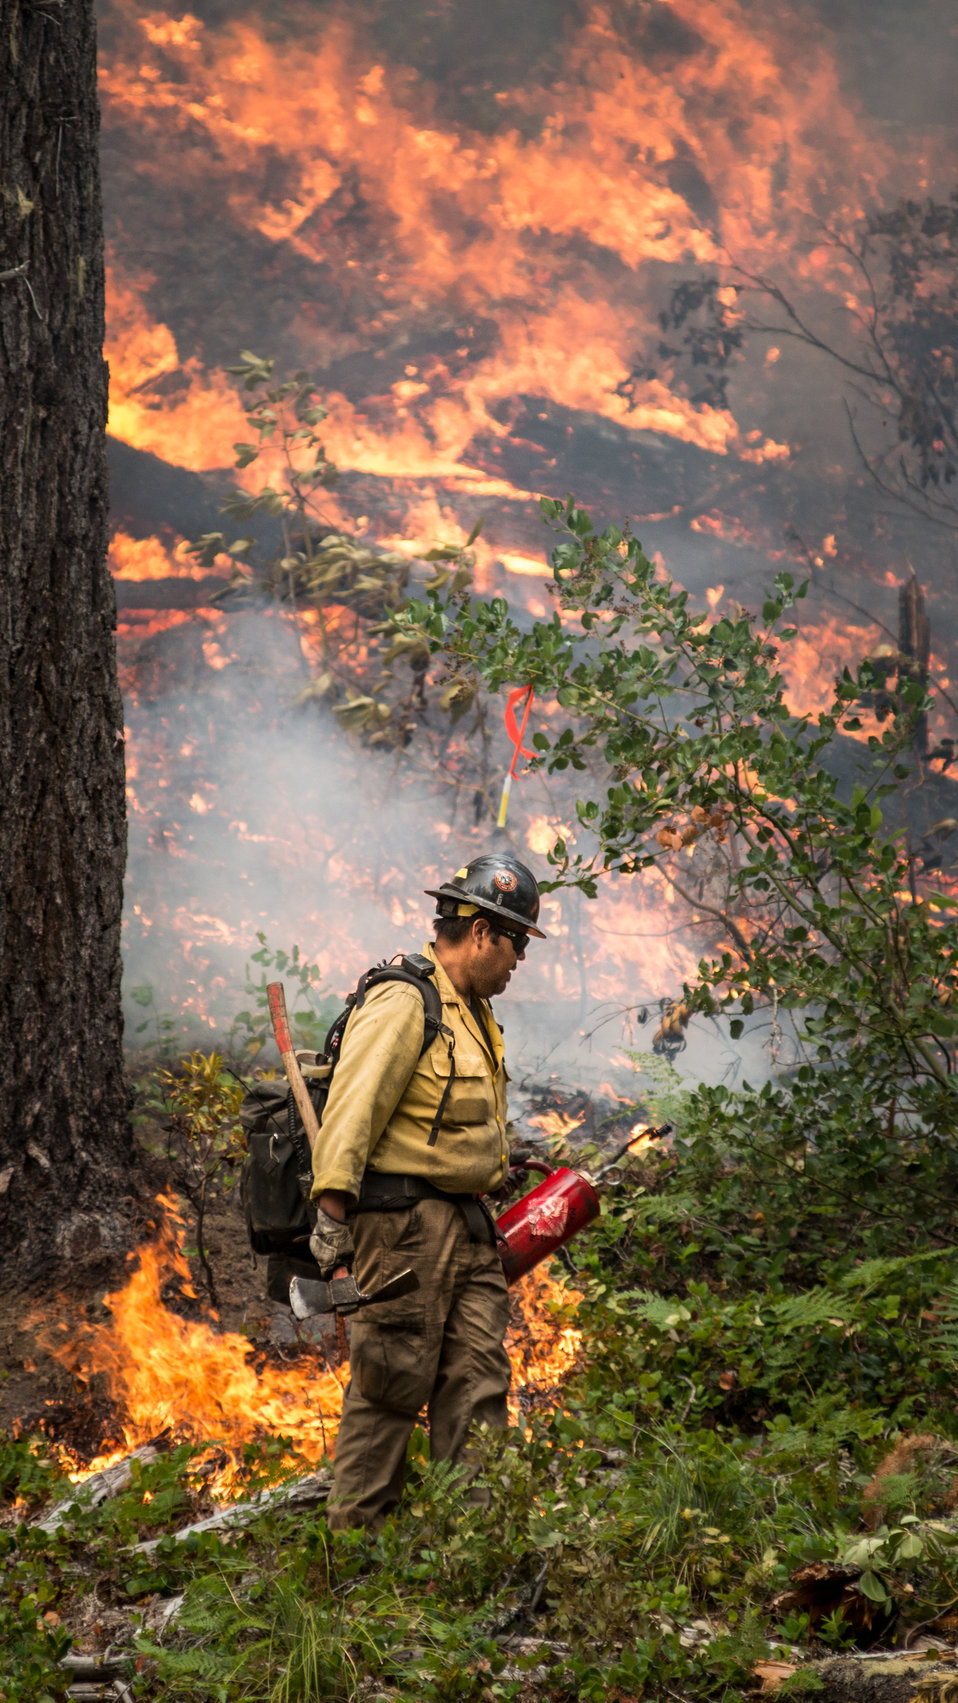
Geronimo Interagency Hotshot Crew, Department of the Interior (DOI) Indian Affairs (IA) Bureau of Indian Affairs (BIA) San Carlos Agency in Arizona; on assignment at the Big Windy Complex Wildlands Fire, approximately 15 miles west of Interstate-5 and East Northeast of Galice, Oregon, conducts a prescribed burn 'burnout' operation to help stop the main fire that may head toward this roadway, on Friday, Aug 9, 2013. The primary mission of the Interagency Hotshot Crews (IHC) is to provide a safe, organized, mobile and highly skilled hand crew for all phases of wildland fire suppression. The arduous duties and specialized assignments required of IHC personnel require uniform staffing, certification, training, equipment, communications, transportation, organization, and qualifications that adhere to interagency standards and guidelines.